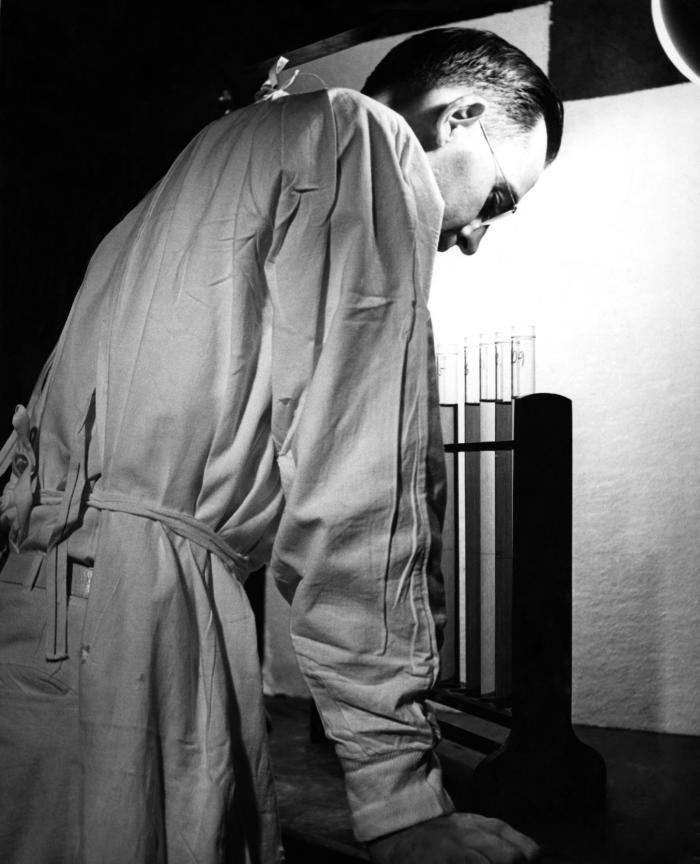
This November, 1943 photograph was provided by the Center for Disease Control's (CDC), National Institute for Occupational Safety and Health (NIOSH). The image depicted an industrial chemist in the process of analyzing test tubes filled with solutions of TNT (trinitrotoluene), and Tetryl, which is an organic explosive compound that is potentially an irritant known to cause industrial dermatitis. The tests being performed induced color changes in the solutions, which were then compared, and the results recorded. Note that the scientist was not wearing a protective filtered breathing mask, goggles, or gloves while carrying out these experiments.